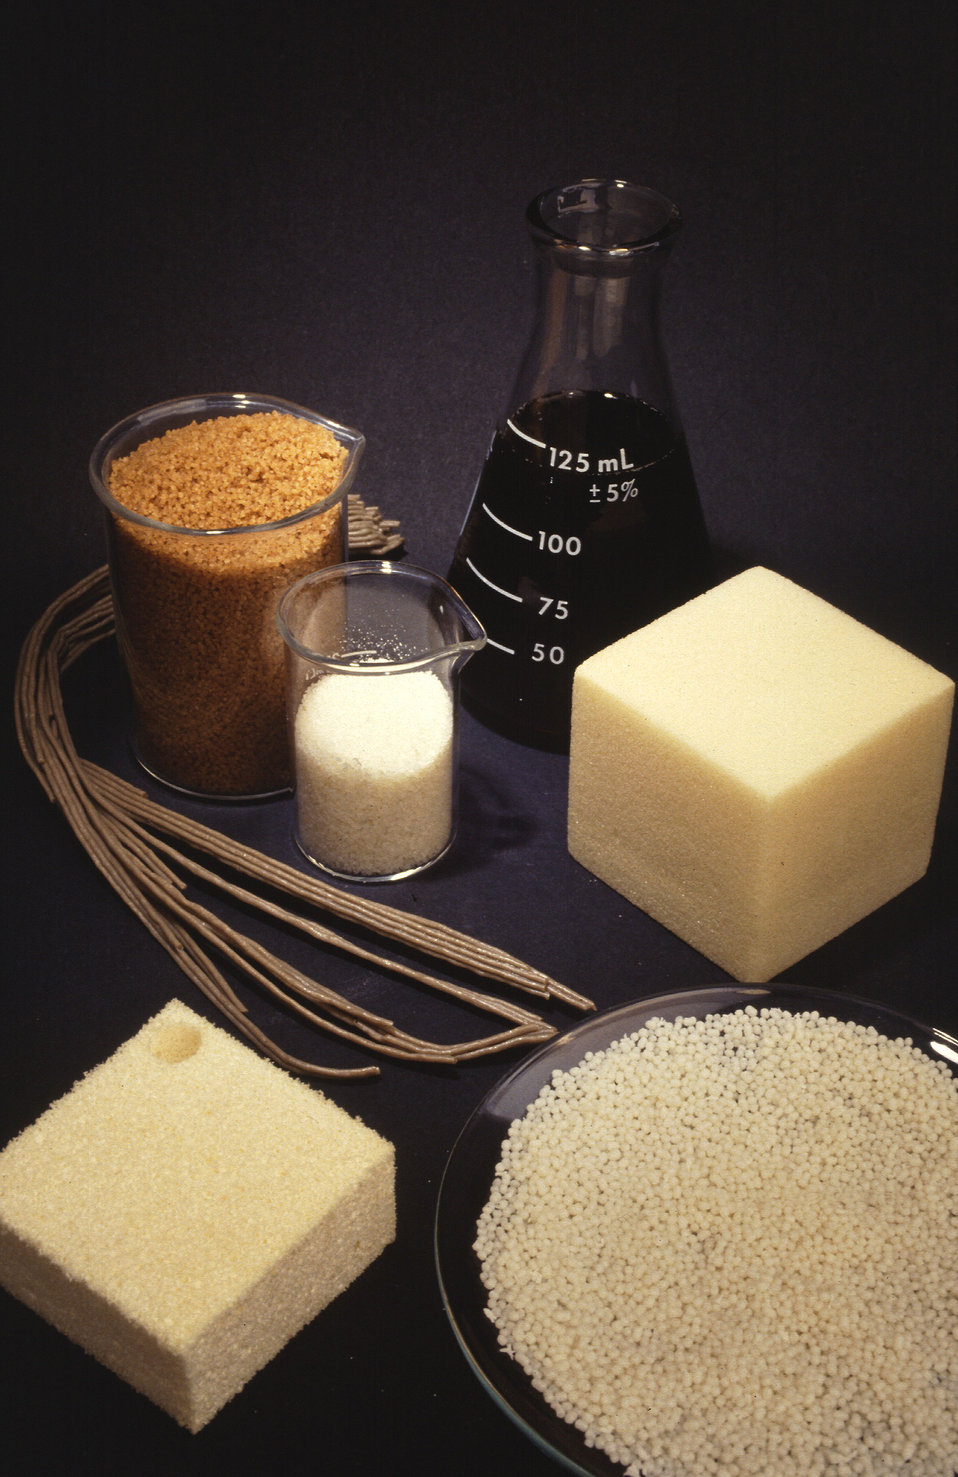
Products of twin-screw processing include fluid glycosides for making rigid polyurethane foam blocks, starchencapsulated herbicide strands that can be made into granules, semiflexible polyurethane foam with starch filler, cationic starch, and the famous superabsorbent starch, Super Slurper.